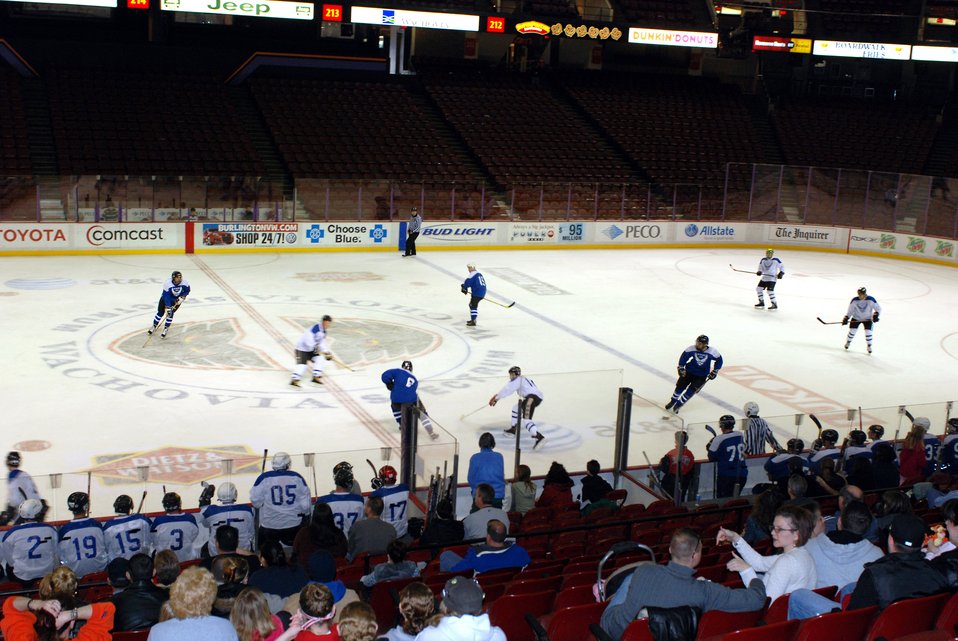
Dover, McGuire raise money for CFC in hockey game

Members of Dover Air Force Base, Del., and McGuire AFB, N.J., hockey teams raised $1,500 for the Combined Federal Campaign in a charity hockey match Jan. 13 in Philadelphia. The game ended with a Dover AFB victory, 9-4. About 300 friends and family members of the two wings attended the charity event.